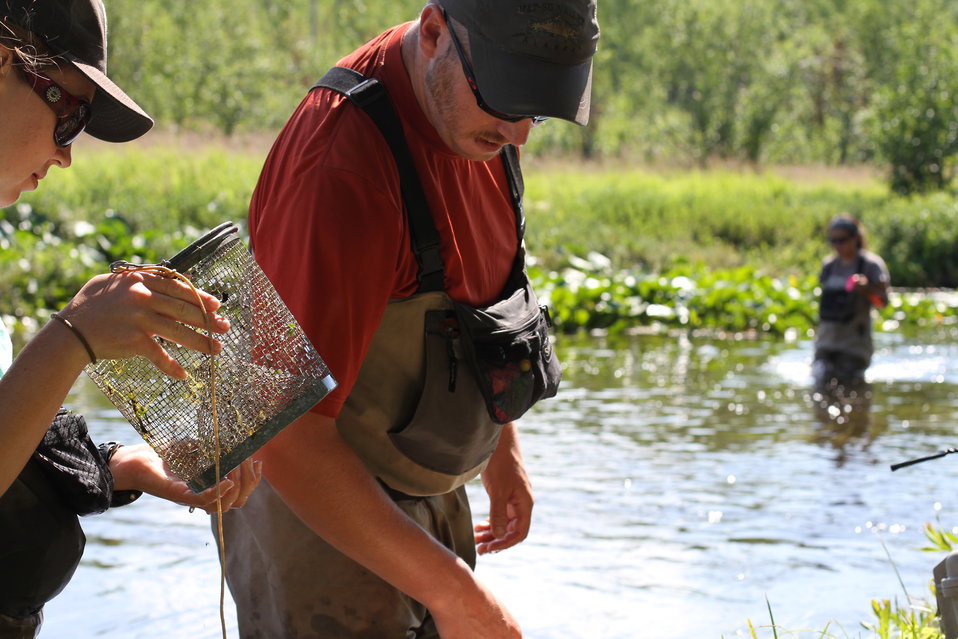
Anchorage Field Office Fisheries Crew at Work

Trapping juvenile coho salmon in the Big Lake watershed. USFWS/Katrina Mueller